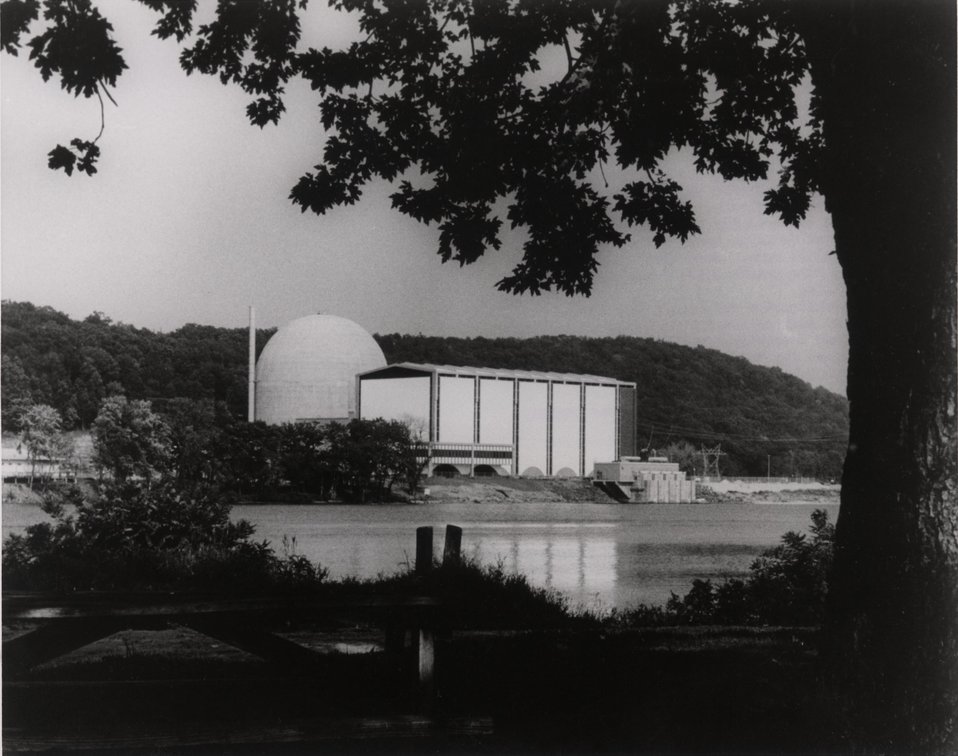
Haddam Neck Nuclear Power Plant.